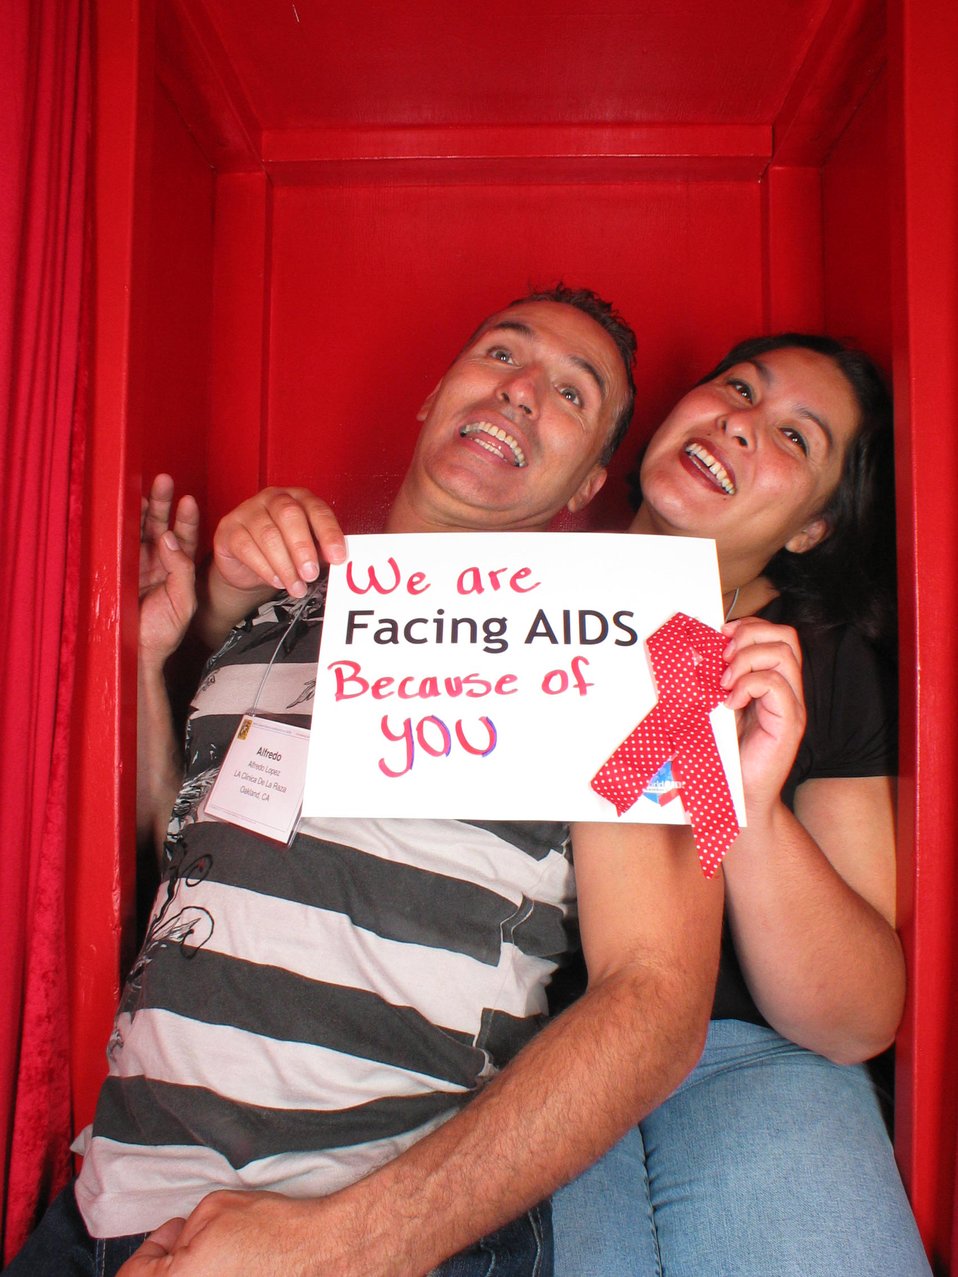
We are Facing AIDS because of you